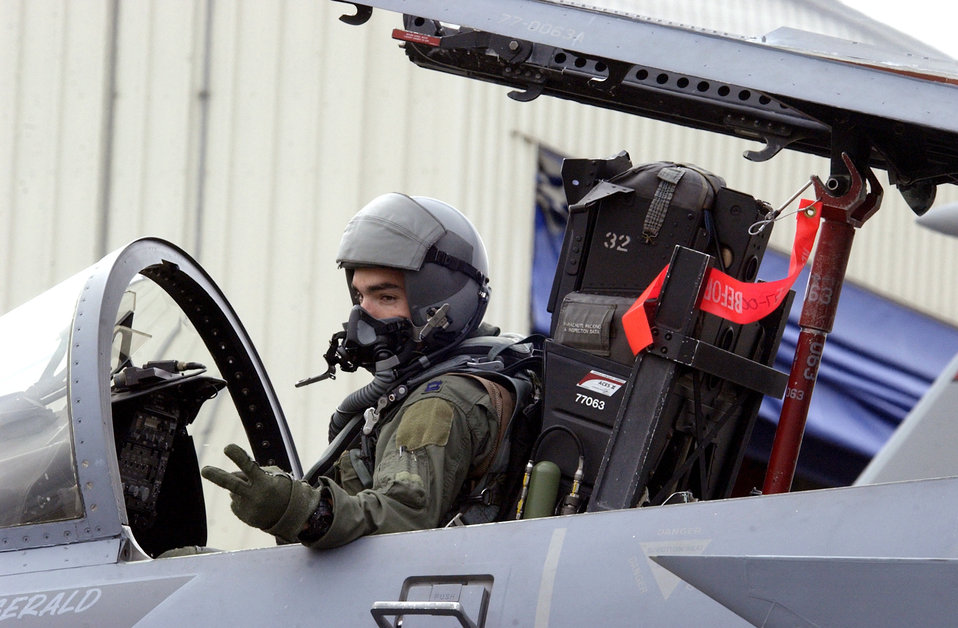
Eagles in Oregon

Capt. Aaron Manley motions to his crew chief on Wednesday, June 14, during an operational readiness inspection at Portland Air National Guard Base in Oregon. Captain Manley is assigned to the 142nd Fighter Wing.